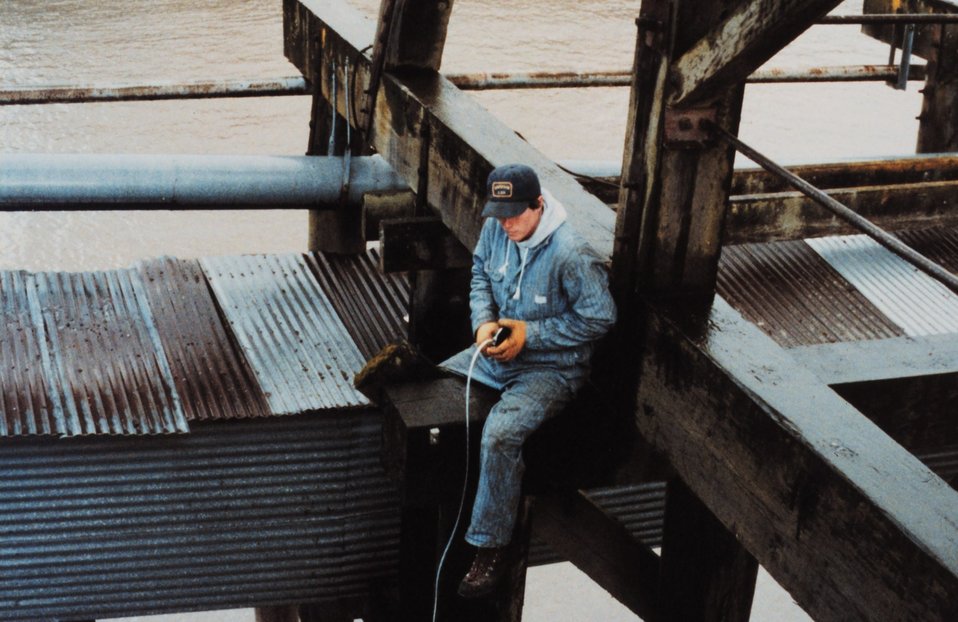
Andy Allen measuring distance from mark on tide staff to location on pier top. Longview is close to the end of tidal influence in the Columbia River, being 66 miles upstream from the Pacific Ocean.